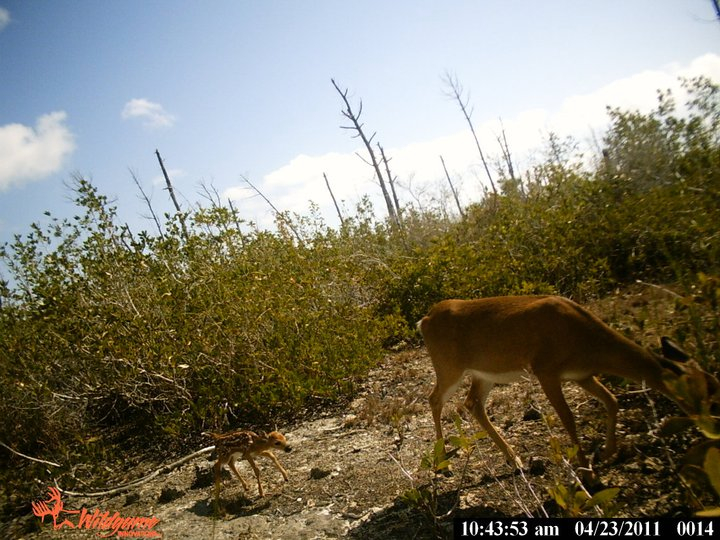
key deer doe and fawn

Florida Keys National Wildlife Refuge Complex, FL
Camera trap photo: USFWS